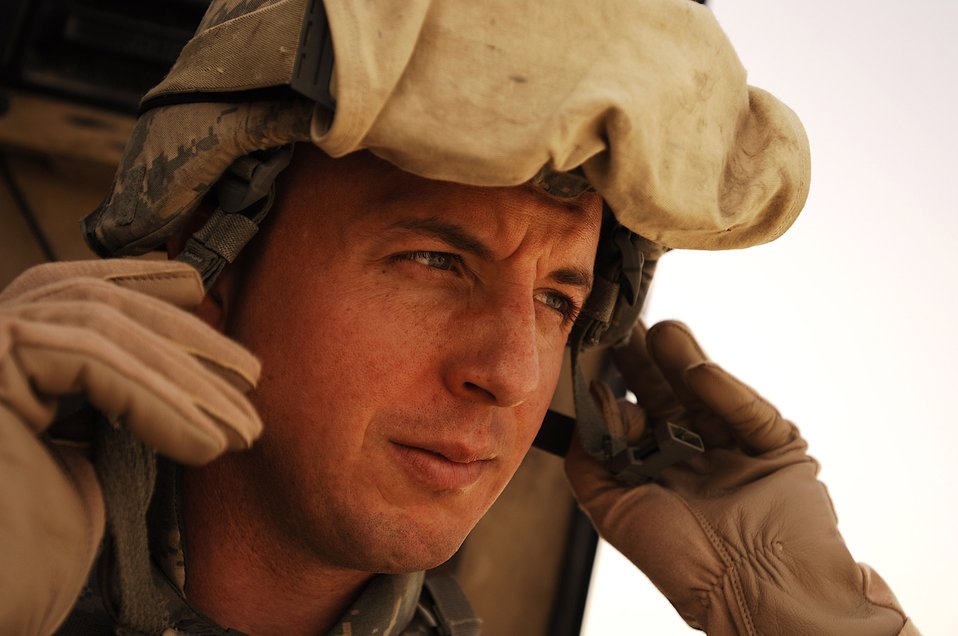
Combat truckers haul cargo through dangerous roads

Tech. Sgt. Scott Neu gears up before leading a recent convoy from an Army camp in Southwest Asia. The Airmen of the 70th and 424th Medium Truck detachments assigned to the 586th Expeditionary Logistics Readiness Squadron are in-lieu-of forces supporting the Army support line-haul convoy movements in and out of Iraq. Sergeant Neu is a convoy commander from the 586th ELRS, 70th MTD deployed from Eglin Air Force Base, Fla.